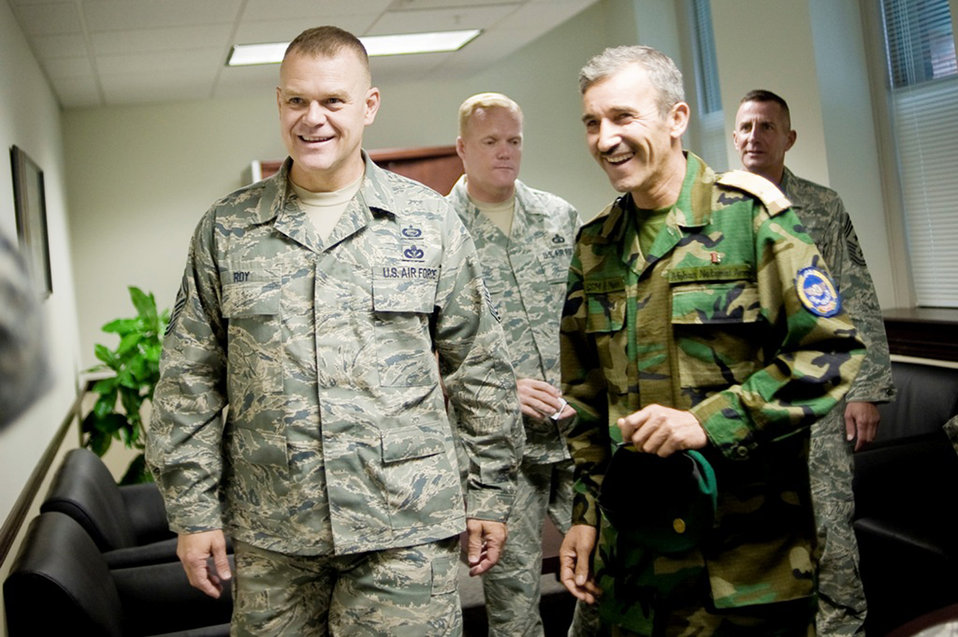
CMSAF meets with Afghan counterpart during Rodeo

Chief Master Sgt. of the Air Force James A. Roy and Command Sergeant Major of the Afghan Air Corps Abdul Malik talk during Air Mobility Rodeo 2009 July 23 at McChord Air Force Base, Wash. Both are the top enlisted members of their respective services.